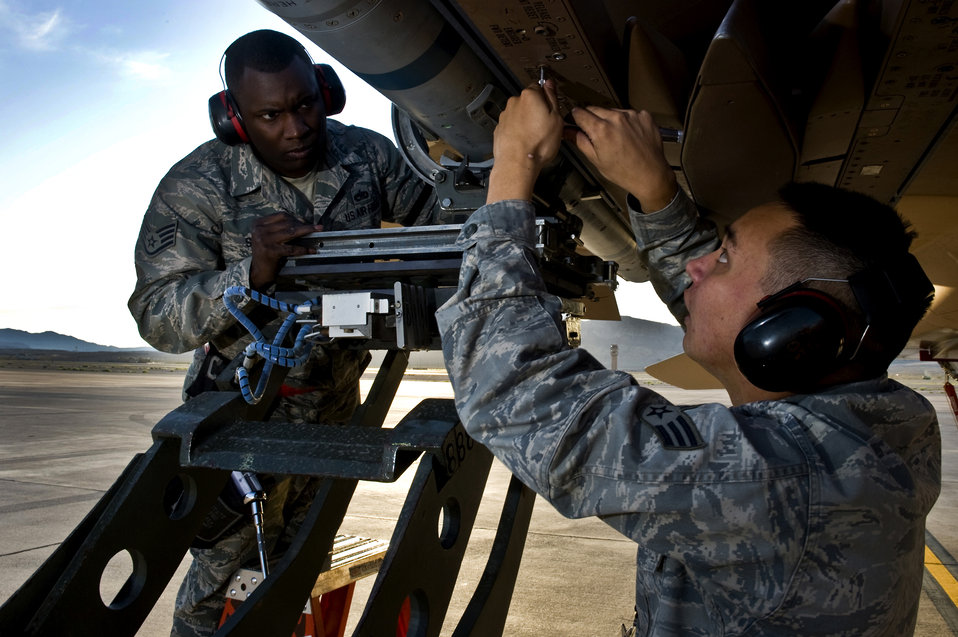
Heated competition

Staff Sgt. Chris Sims (left) and Senior Airman Phillip Hohner lock down an Aim-120 missile to a F-15 Eagle during a load crew competition Oct. 7, 2011, at Nellis Air Force Base, Nev. Weapons load competitions are conducted quarterly to keep Airmen sharp and recognize superior performers. Weapons load teams are evaluated for use of the checklist, safety, and overall speed. Both Airmen are 757th Aircraft Maintenance Squadron aircraft armament systems technicians.